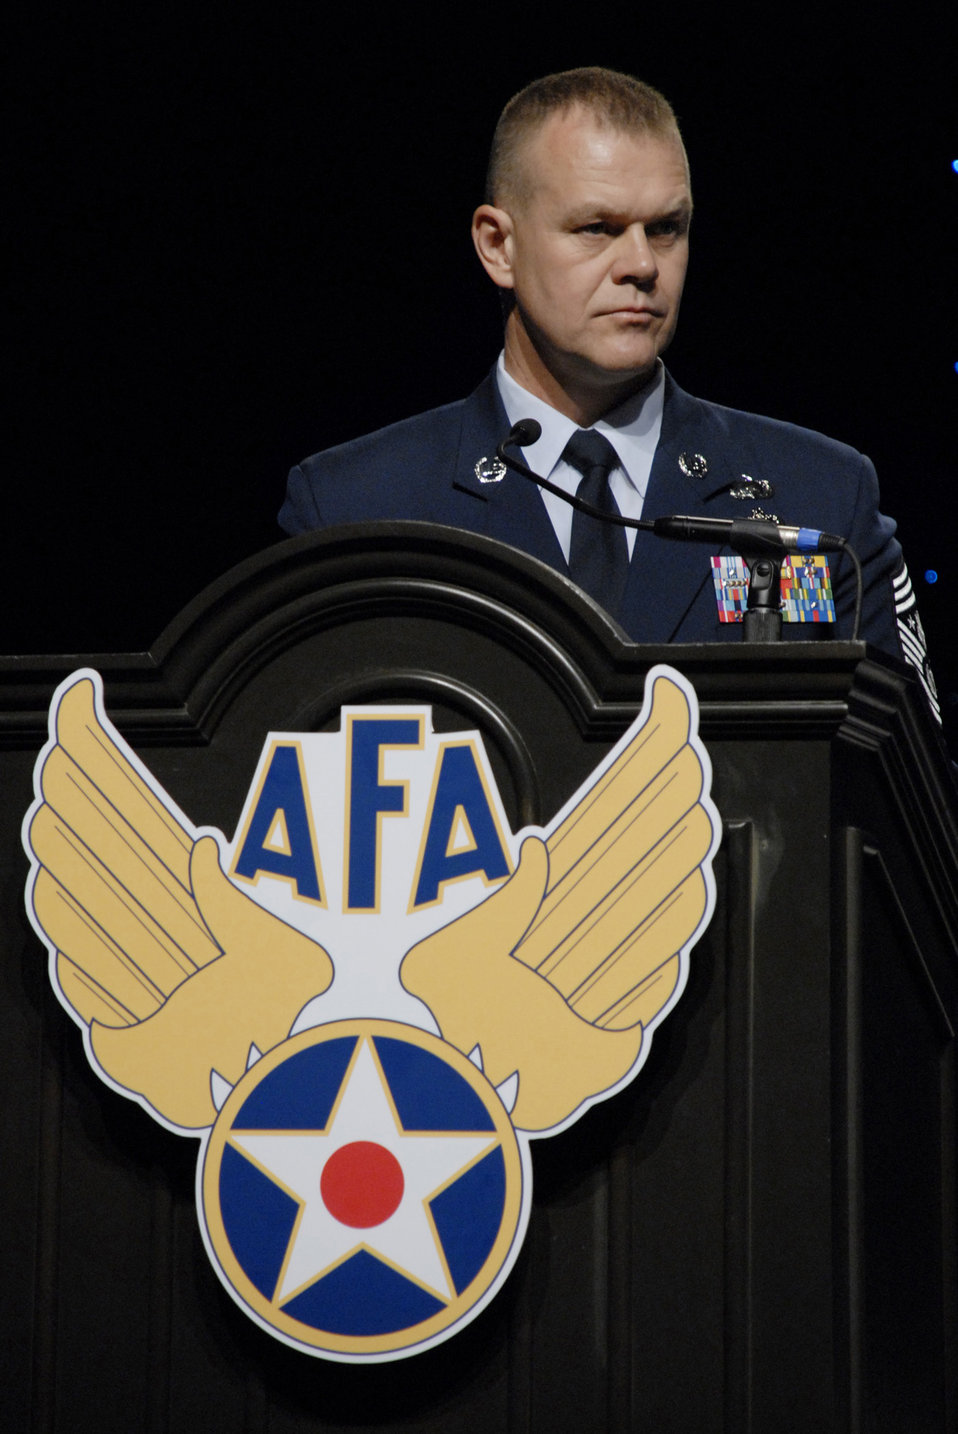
Senior Air Force enlisted officials address Airmen's concerns

Chief Master Sergeant of the Air Force James A. Roy gives opening remarks during the Chief's Forum at the 2009 Air Force Association Air & Space Conference and Technology Exposition Sept. 15, 2009, in Washington, D.C. During the event the command chief panel discussed